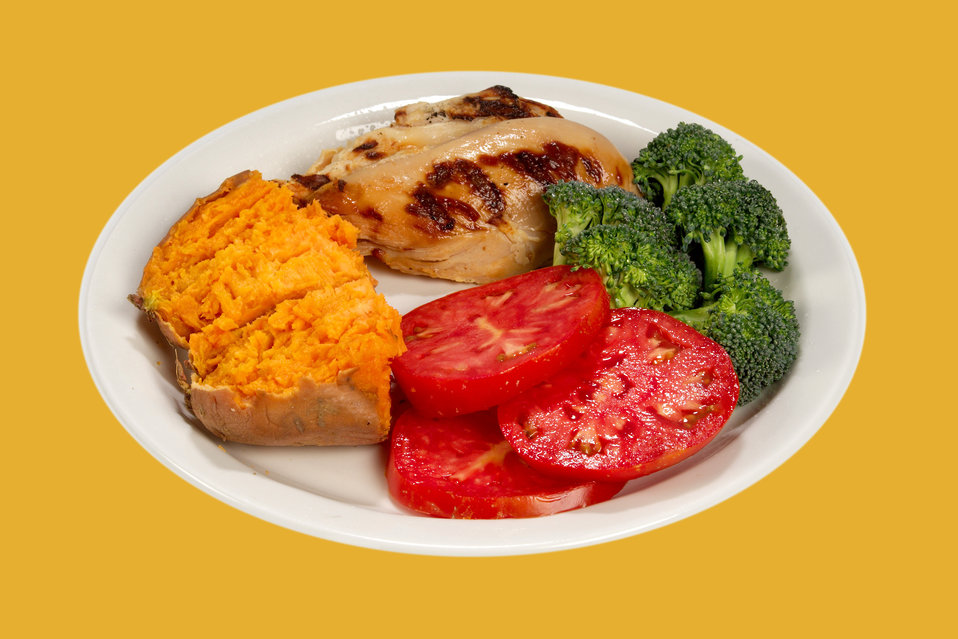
This white ceramic plate had been topped with a healthy, balanced meal consisting of a broiled chicken breast, half a sweet potato, three slices of bright red tomato, and some steamed broccoli florets, and measured 293 calories in its entirety. Compare this healthy choice in foods to a rather high caloric alternative in PHIL 15032.